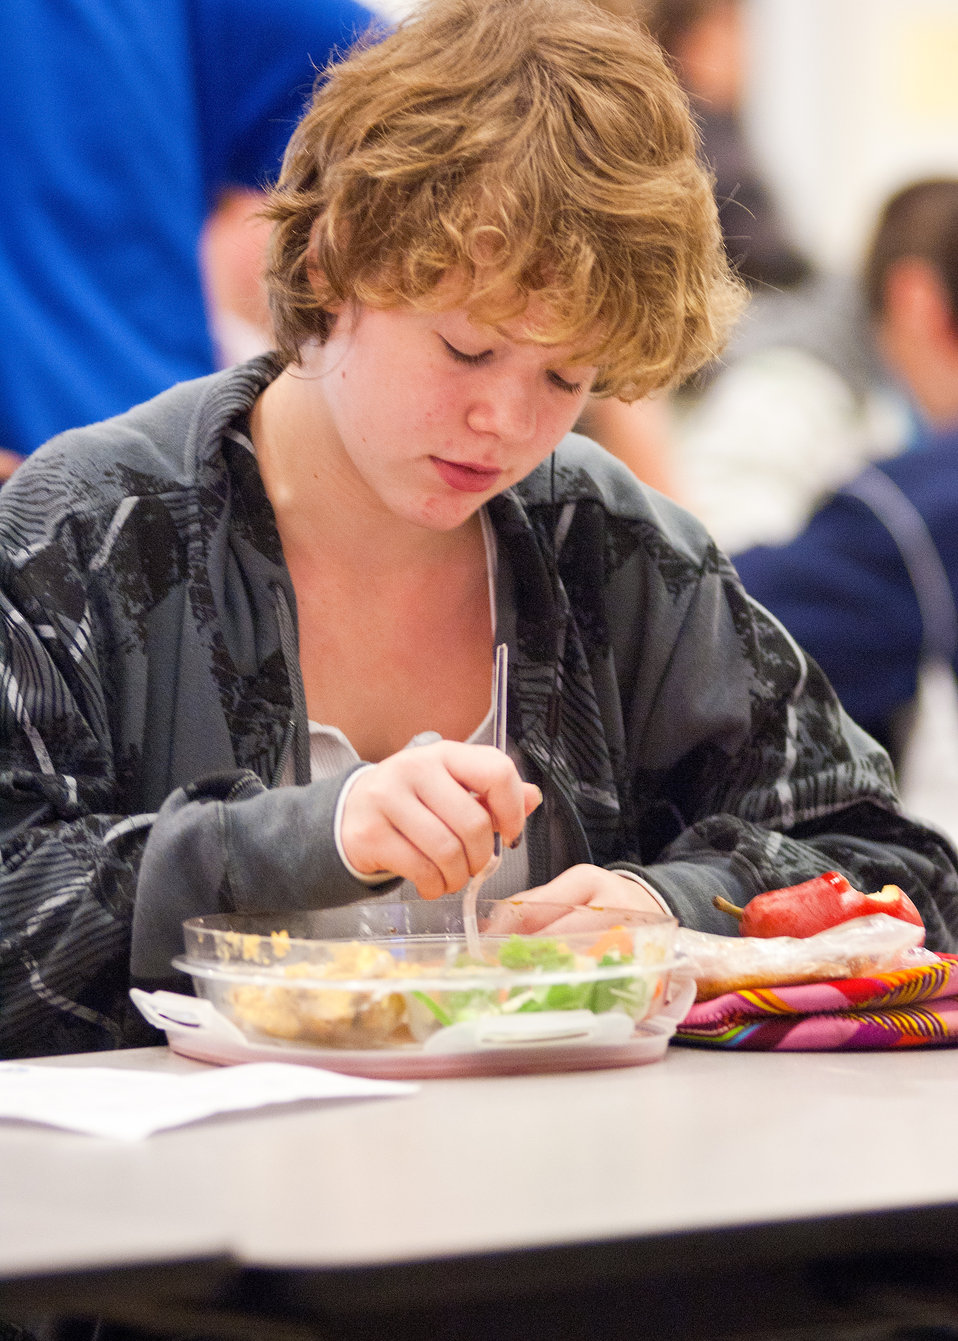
Gillian Doby a Washington-Lee High School student in Arlington, Virginia enjoys a healthy salad during lunch On Wednesday, October 19, 2011. The National School Lunch Program is a federally assisted meal program administered by the United States Department of Agriculture, Food and Nutrition Service (FNS) operating in public, nonprofit private schools and residential child care institutions. It provides nutritionally balanced, low-cost or free lunches to children each school day.